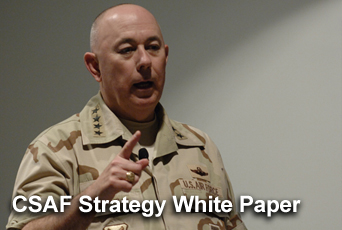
Chief's strategy white paper unveiled

Air Force Chief of Staff Gen. T. Michael Moseley unveiled his strategy white paper Feb. 7 while meeting with members of Air University's professional military education classes at Maxwell Air Force Base, Ala.